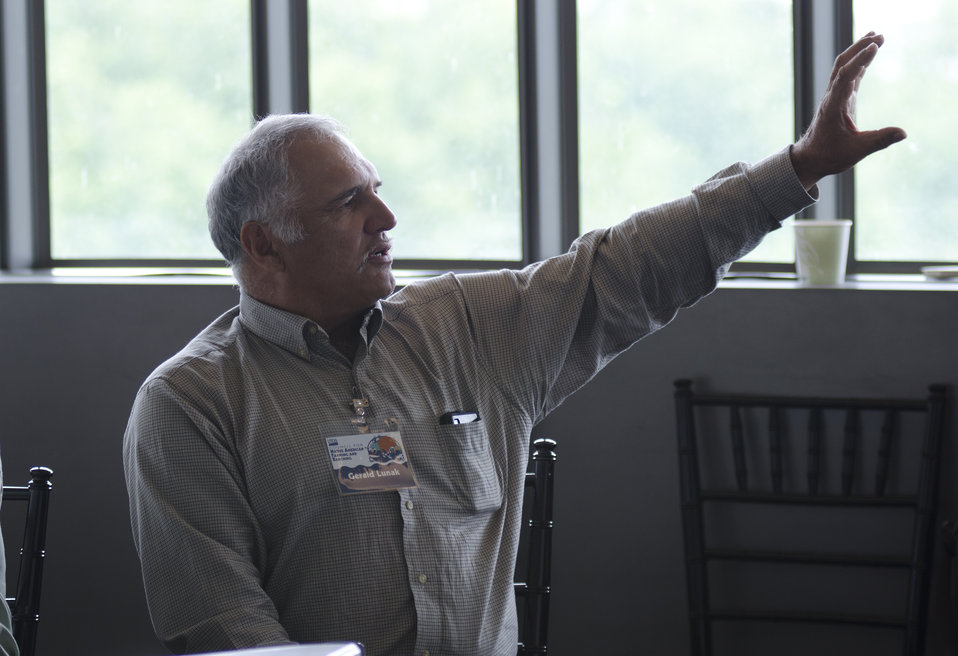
Natural Resources Director of the Blackfeet Nation in Cut Bank, MT., Gerald Lunak speaks at the closing session of the first business meeting of the U.S. Department of Agriculture’s (USDA) Council for Native American Farming and Ranching (CNAFR) held at the National Museum of the American Indian in Washington, D.C., on Wednesday, Aug. 15, 2012. CNAFR was created to advise the Secretary on ways to eliminate barriers to participation for Native American Farmers and Ranchers in USDA programs. The Council was established as part of the Keepseagle settlement, and is conducted under the oversight of USDA's Office of Tribal Relations under the Office of the Secretary of Agriculture.